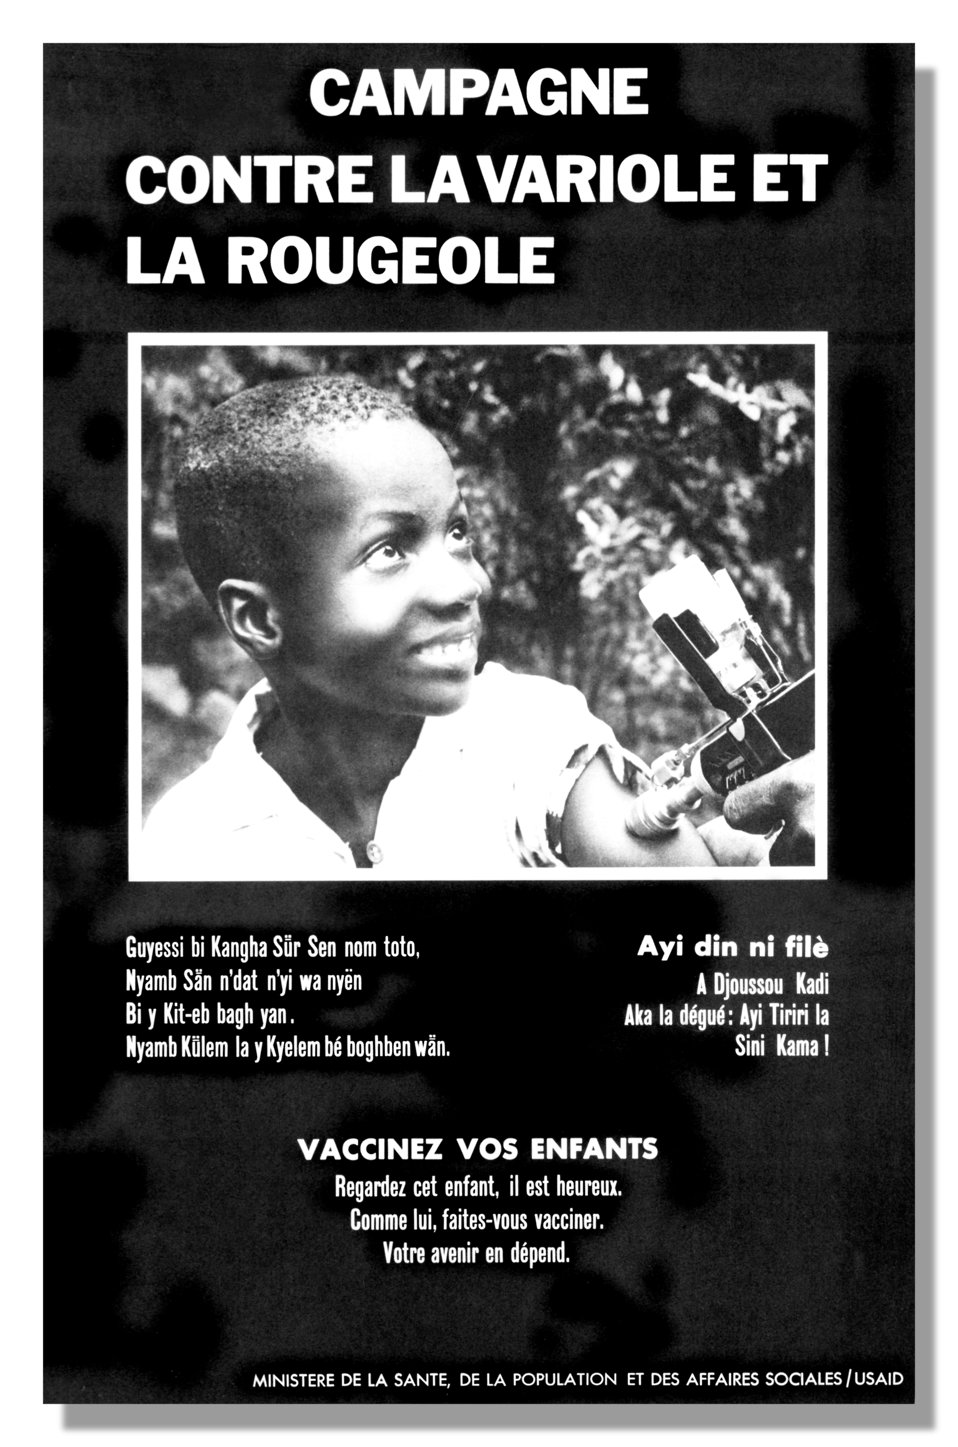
This foreign poster was created prior to 1979 promoting the importance of Smallpox and Measles vaccination in children.